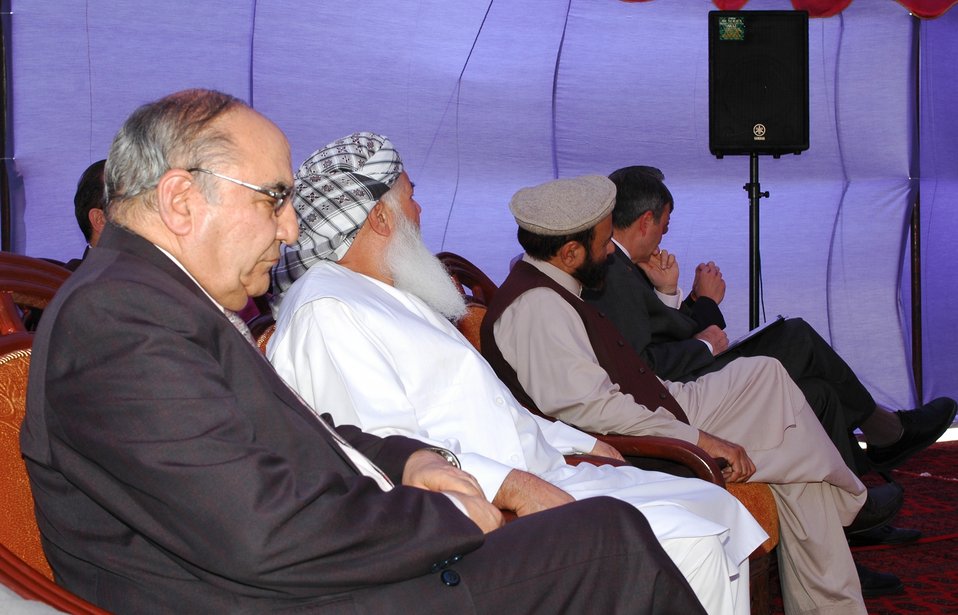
105 MW Tarakhil Power Plant Handover